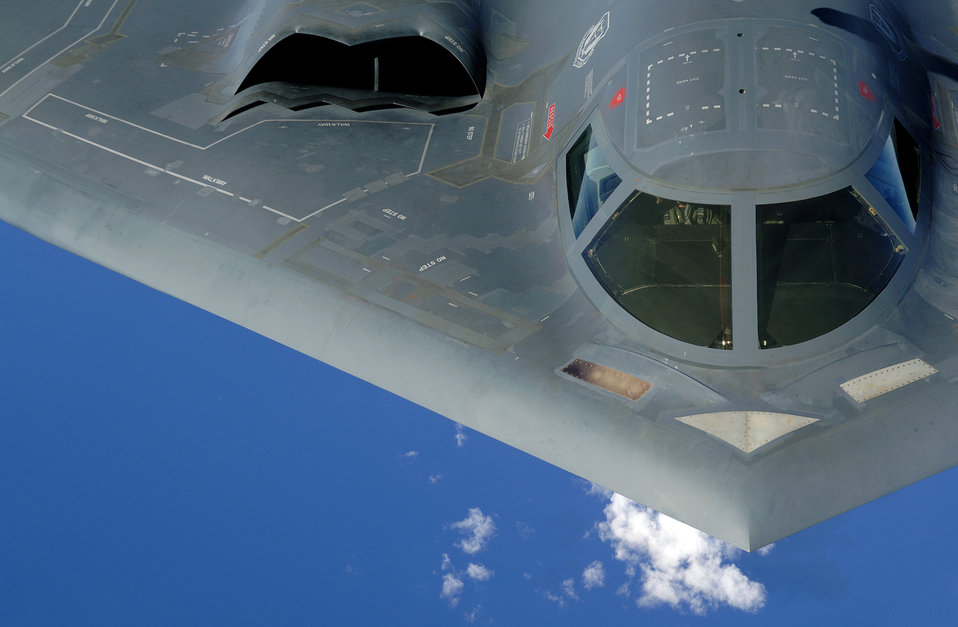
Over the Pacific

A B-2 Spirit soars after a refueling mission over the Pacific Ocean on Tuesday, May 30, 2006. The B-2, from the 509th Bomb Wing at Whiteman Air Force Base, Mo., is part of a continuous bomber presence in the Asia-Pacific region.